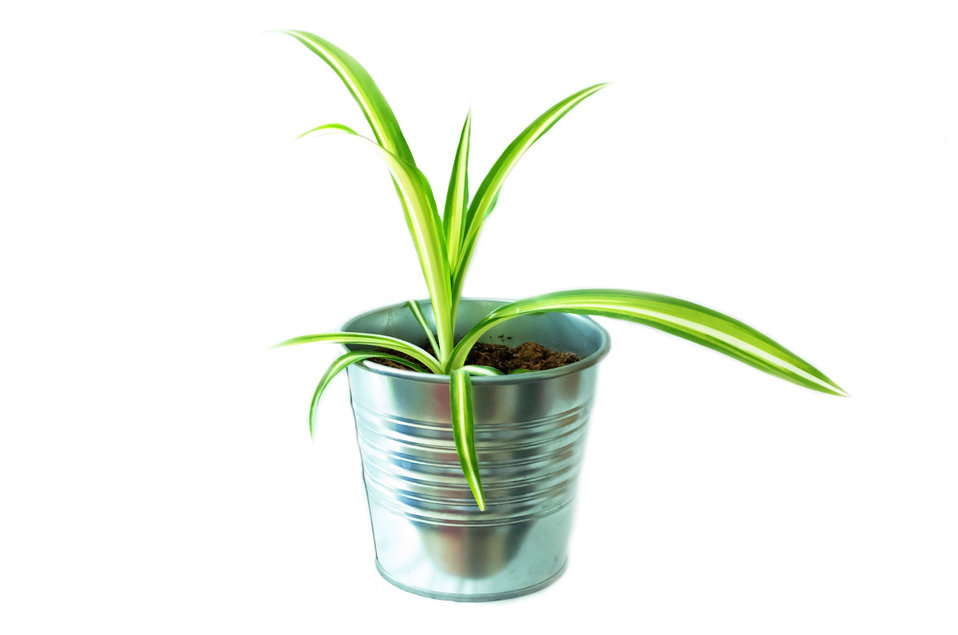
Green plant on the white background.